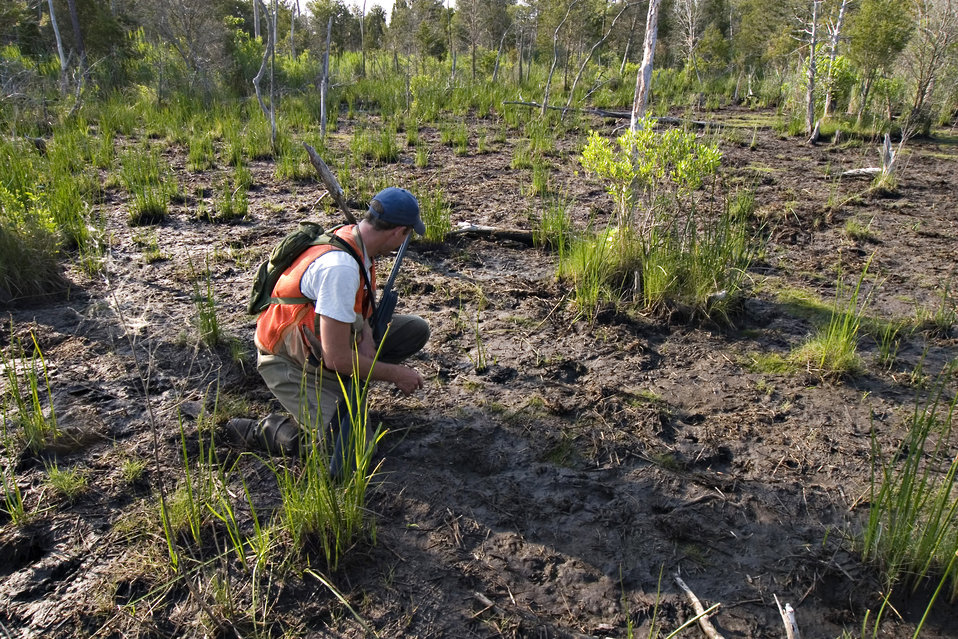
Invasive nutria are turning this Chesapeake, MD marsh into a muddy wasteland.